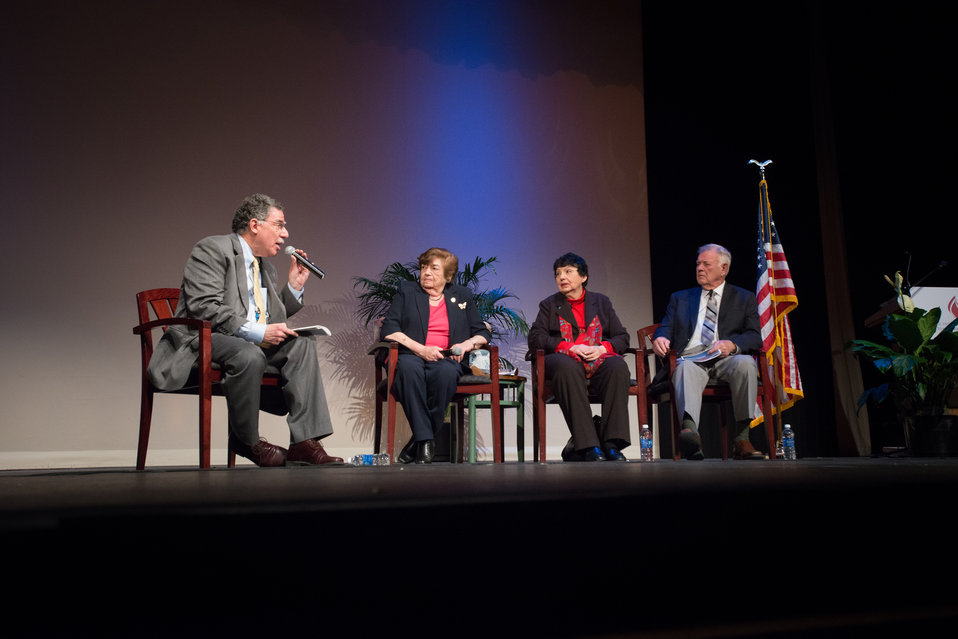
The 2013 Federal Inter-Agency Holocaust Remembrance Day, at the Lincoln Theater, on Wednesday, April 17, 2013, in Washington, D.C. The moderator is United States Holocaust Memorial Museum Division of the Senior Historian Director Peter Black, Ph.D., at podium or seated on left, and the guest speakers, left to right, are Theresienstadt Concentration Camp Czech Jewish Holocaust Survivor Ela Stein-Weissberger, and German Jewish Holocaust Survivor Inge Auerbacher; and Dachau Concentration Camp Liberator Jimmy Gentry. Since the 1979 President’s Commission on the Holocaust, an annual proclamation signed by the President of the United States recognizes the importance of remembering the atrocities of the Holocaust that should never be forgotten or be ignored.